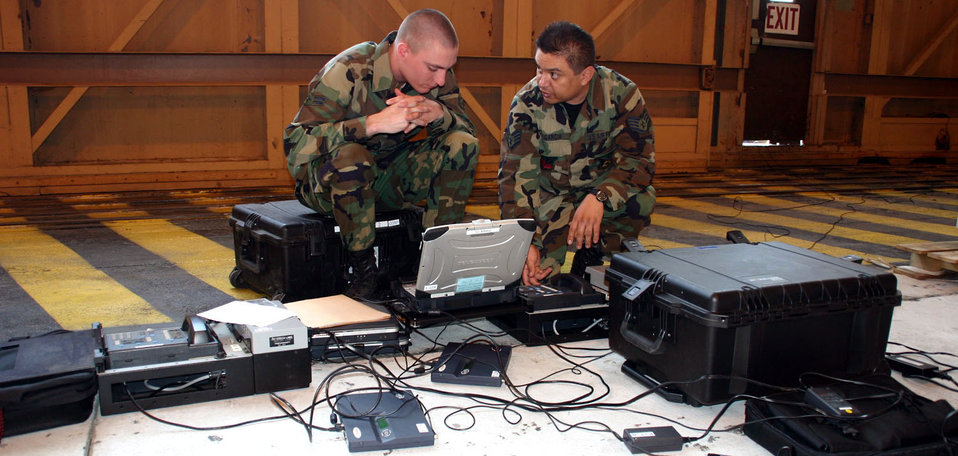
Kit prep

Airman 1st Class Travis McManus and Staff Sgt. Raphael Garcia test a secure communications fly-away kit before an E-3 deployment at Tinker Air Force Base, Okla.